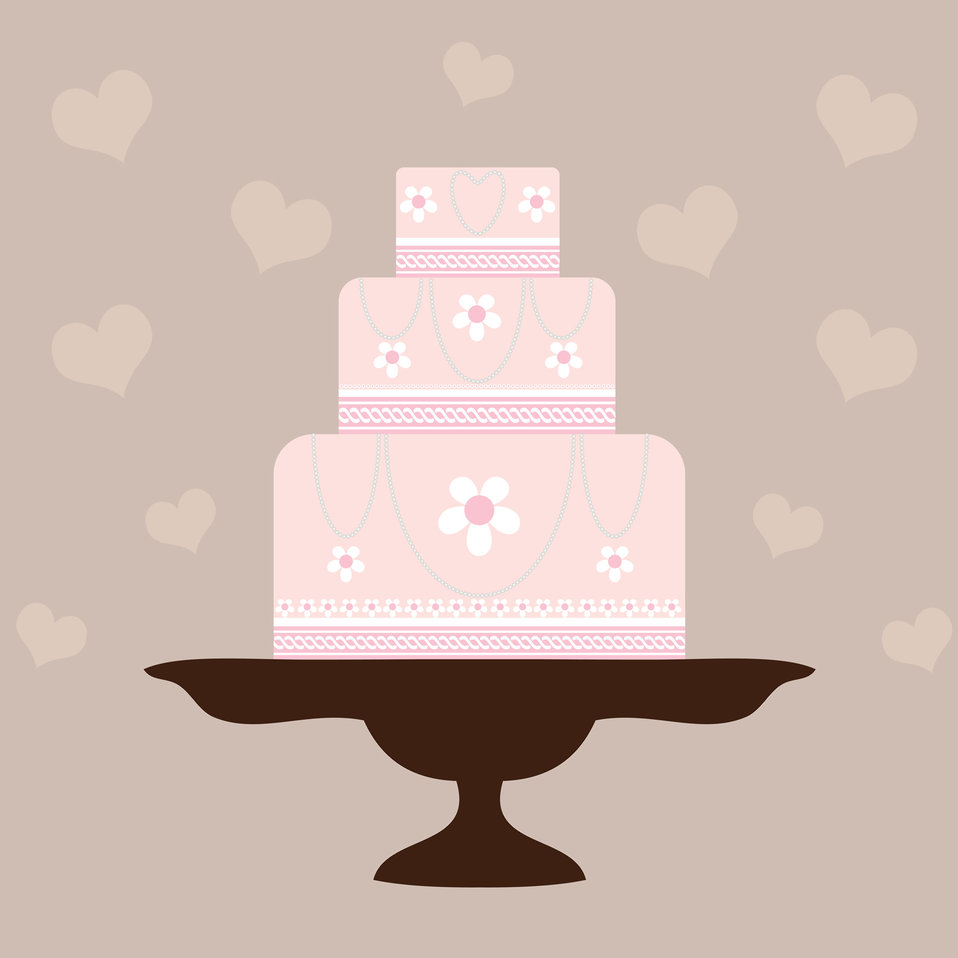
Pink cake

Pink wedding cake.